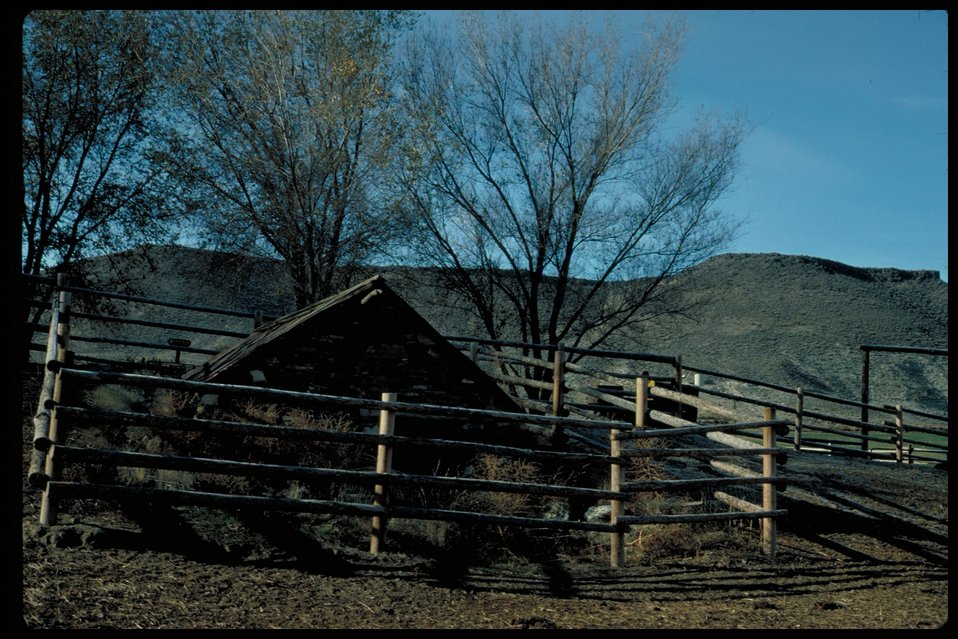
Oregon Trail Mountain Ranch Sinker Creek Lower Snake River District